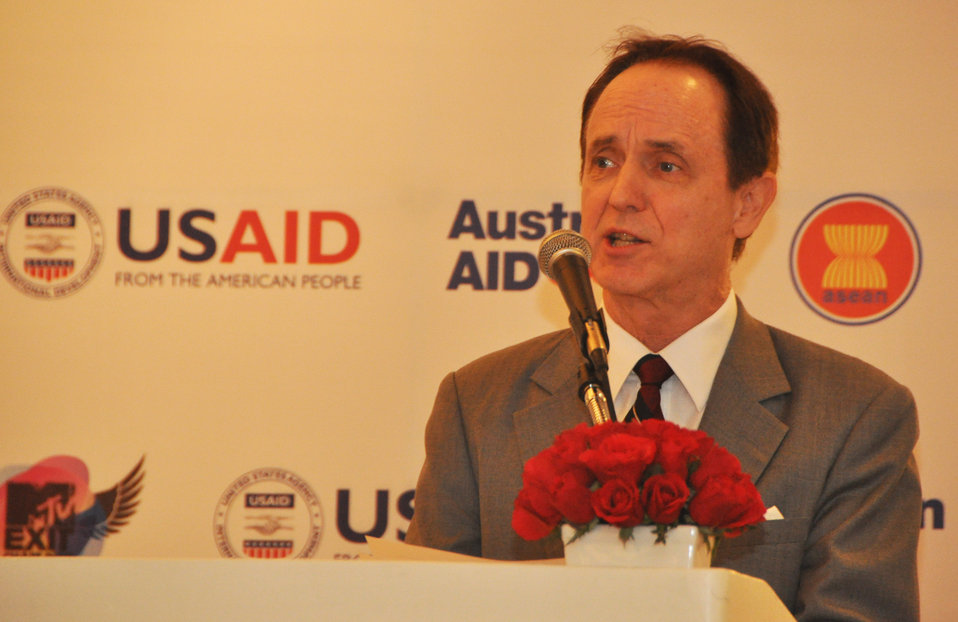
USAID Mission Director Francis Donovan speaks at the MTV EXIT press launch in Hanoi

USAID joins MTVExit to launch documentary and awareness campaign against human trafficking